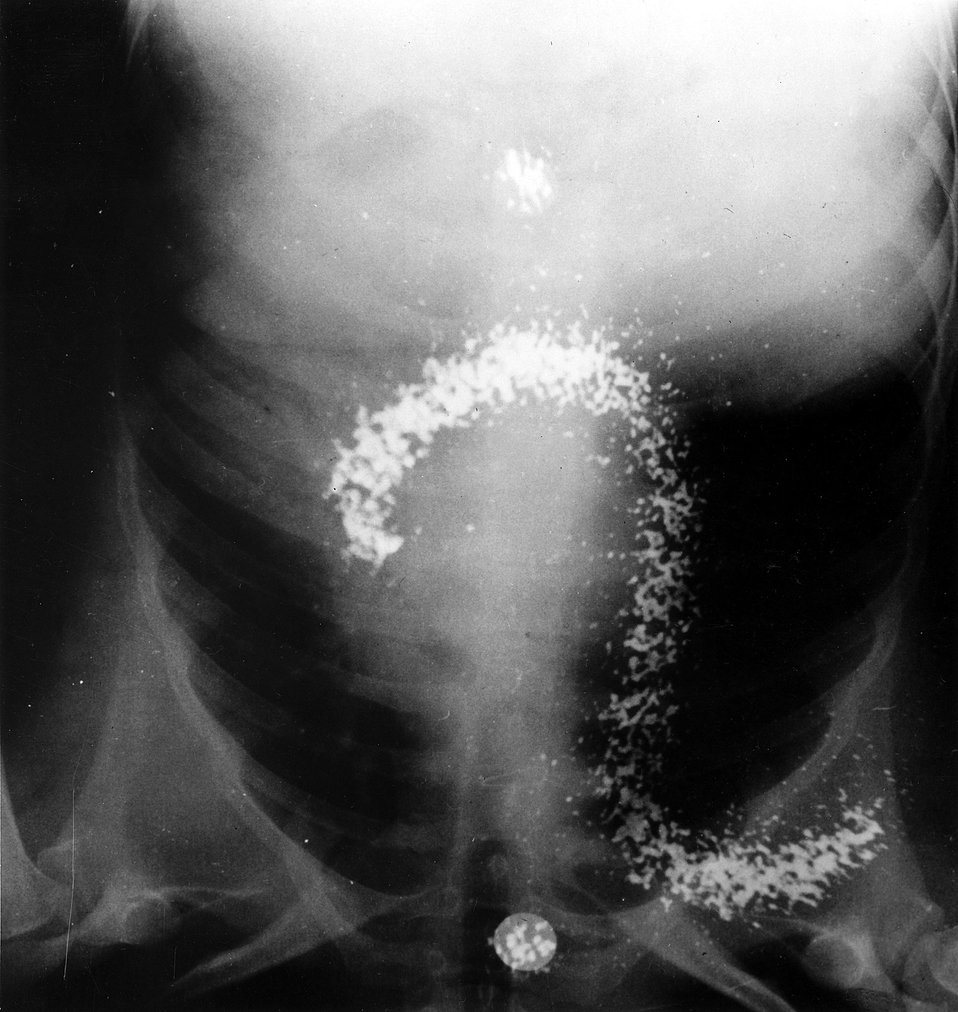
View of chest area during cardiac catherization. Taken with Sointillation camera developed at Donner Laboratory. Circa 1972.